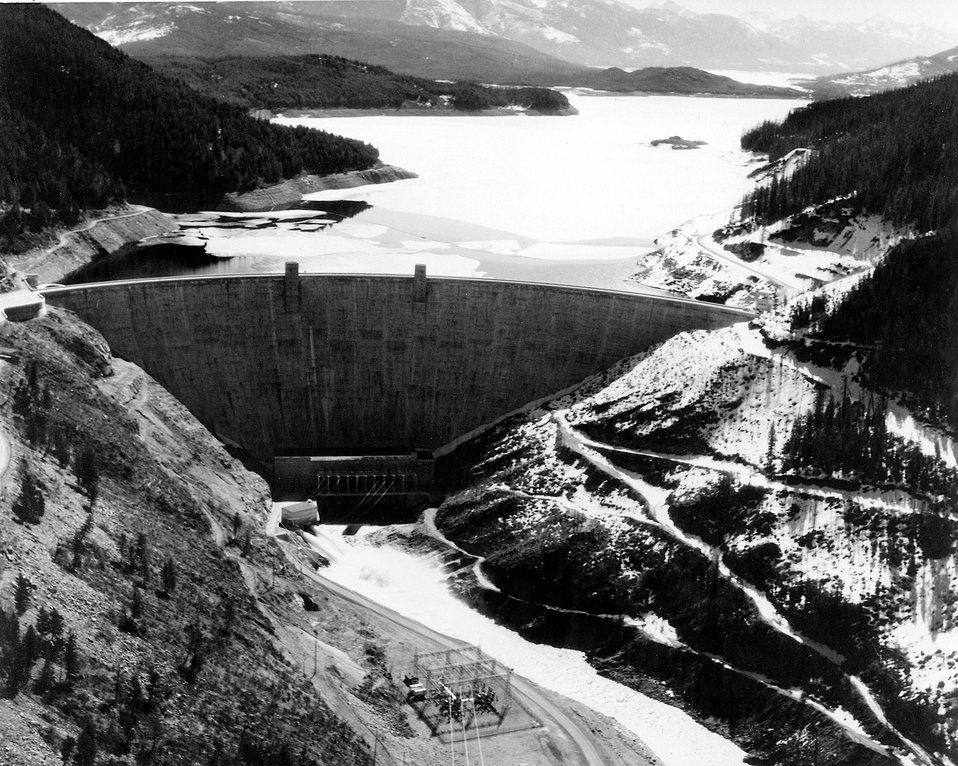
Hungry Horse Project, Montana. View of Hungry Horse Dam and Reservoir. c. 1980